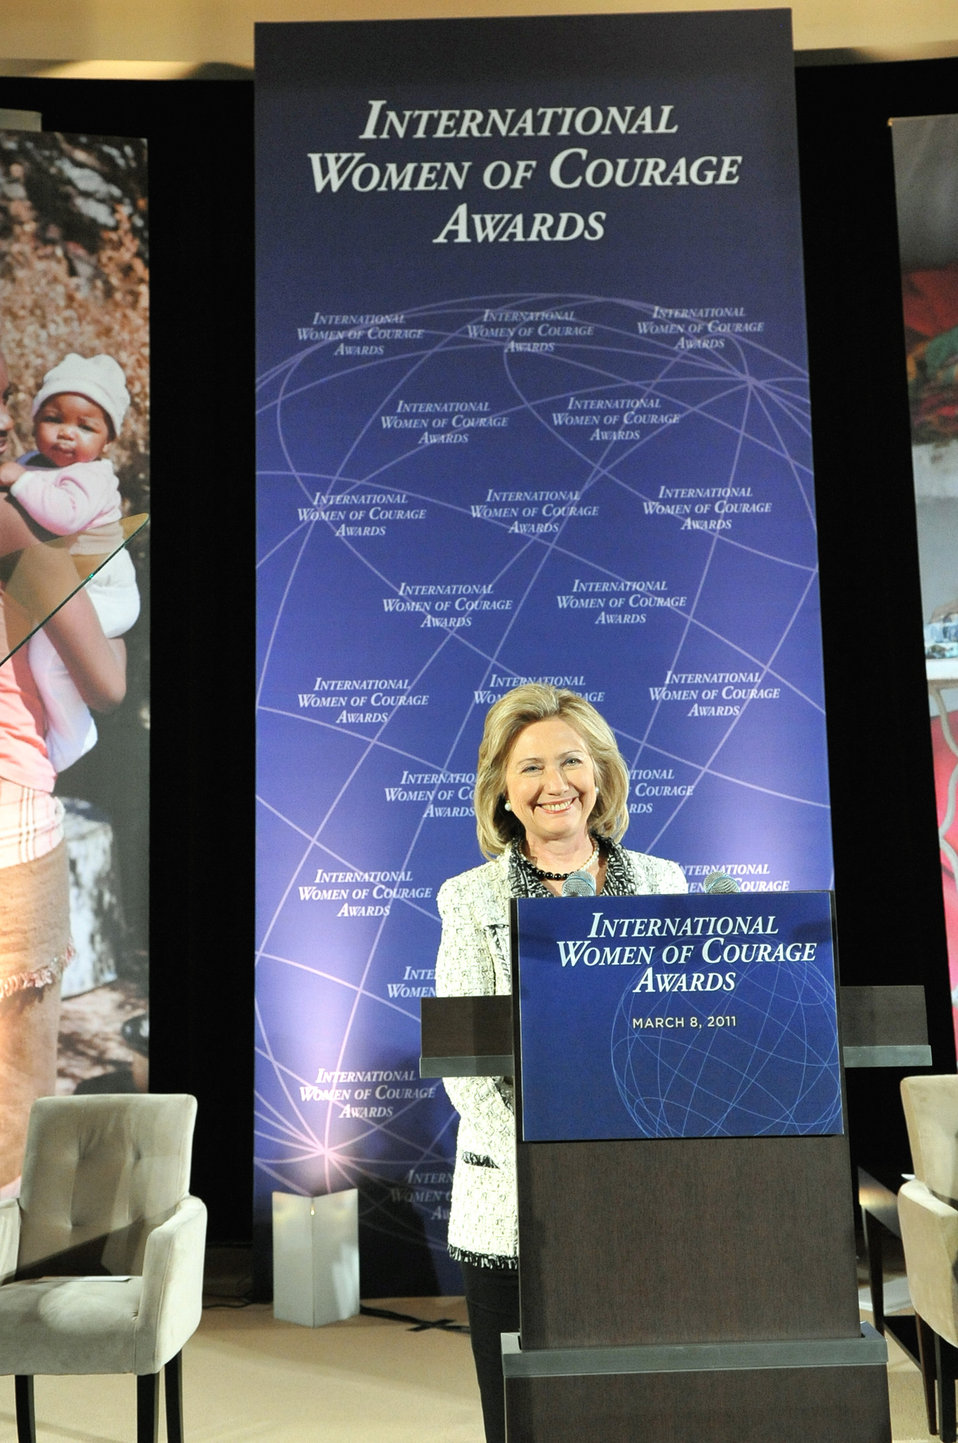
Secretary Clinton Delivers Remarks at 2011 International Women of Courage Awards Ceremony

U.S. Secretary of State Hillary Rodham Clinton, center right, and First Lady of the United States Michelle Obama, center left, pose for a photo with the honorees of the 2011 International Women of Courage Awards at the U.S. Department of State in Washington, D.C., on March 8, 2011.